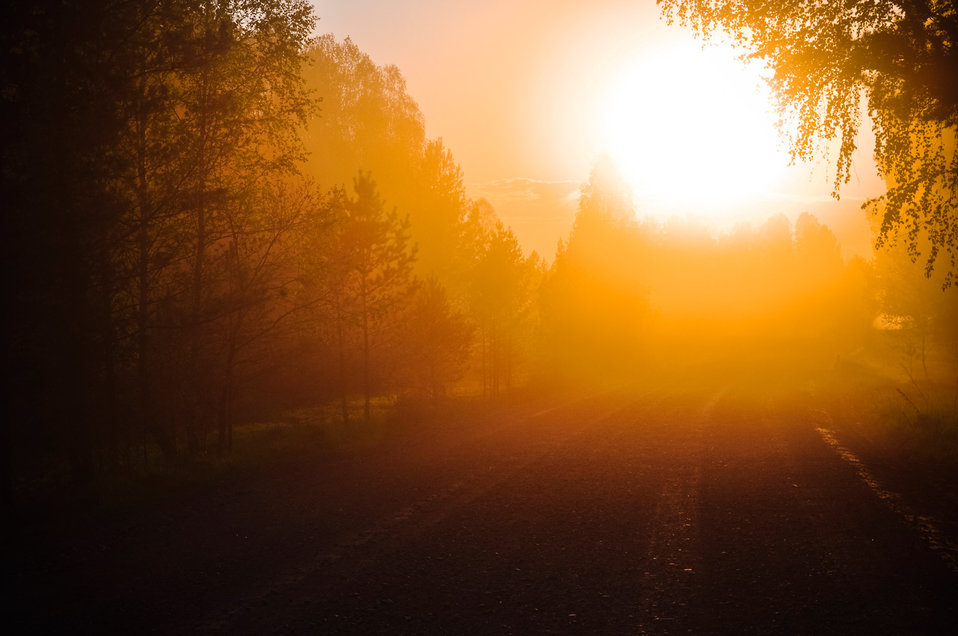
Sunset and the road

Orange sunset orange road.